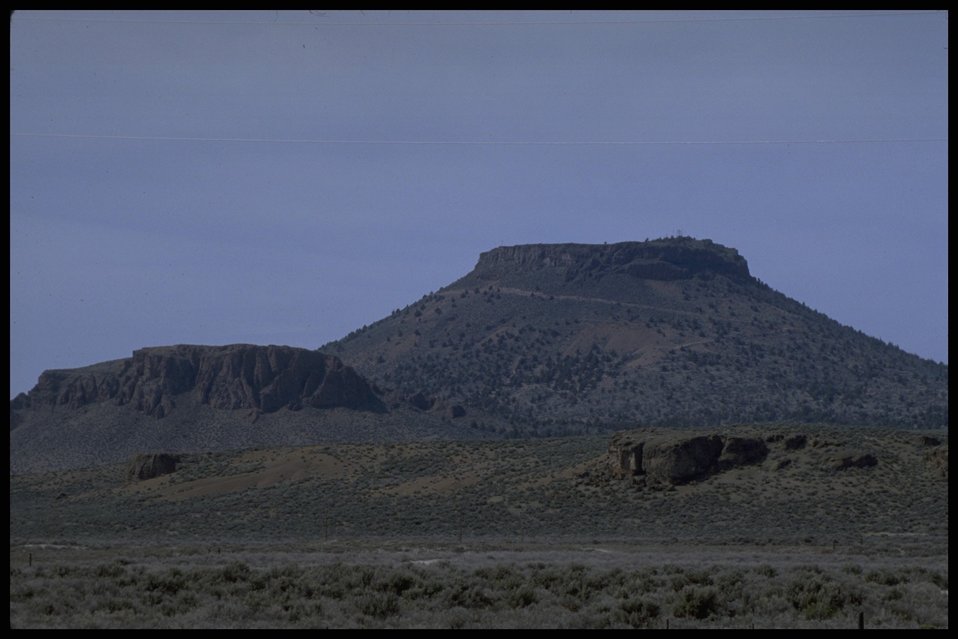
Table Rock, Lakeview District.